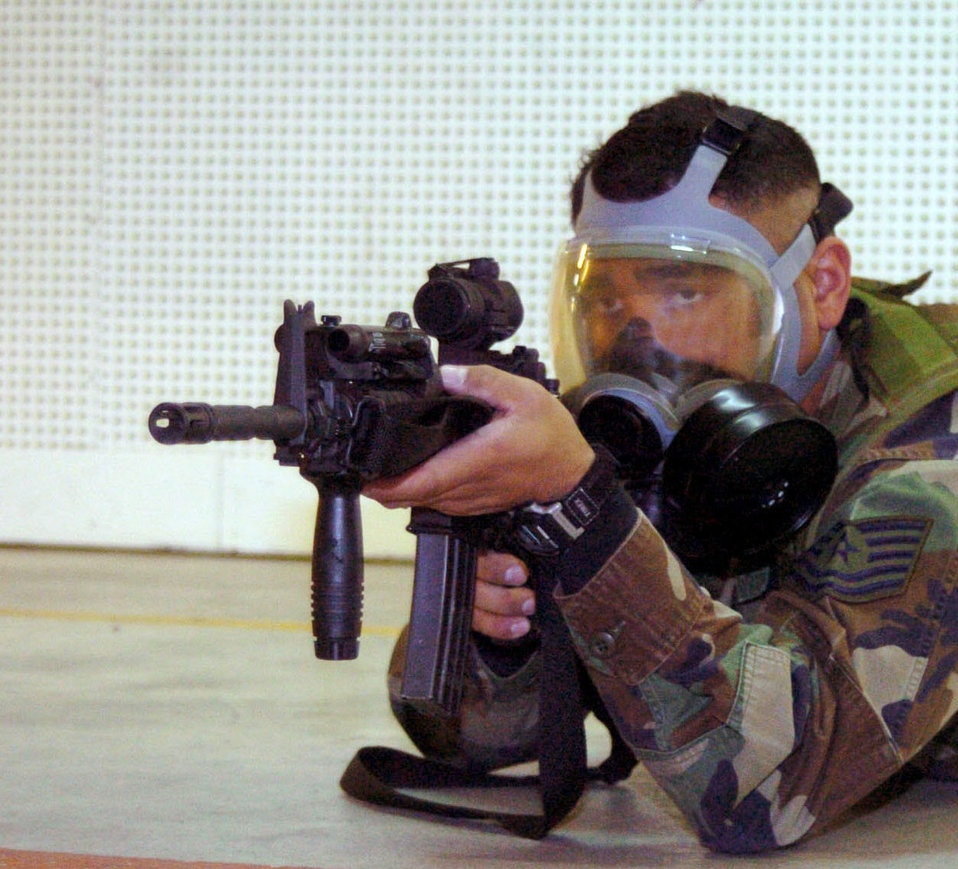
Spangdahlem Airmen train with new high-tech weapon

SPANGDAHLEM AIR BASE, Germany -- Tech. Sgt. Lorenzo Javier practices shooting an M-4 rifle while wearing his gas mask. About six months ago, the Air Force began requiring all Airmen qualifying for weapons training to shoot while wearing their gas masks. Sergeant Javier is a force protection evaluator with the 52nd Security Forces Squadron here.